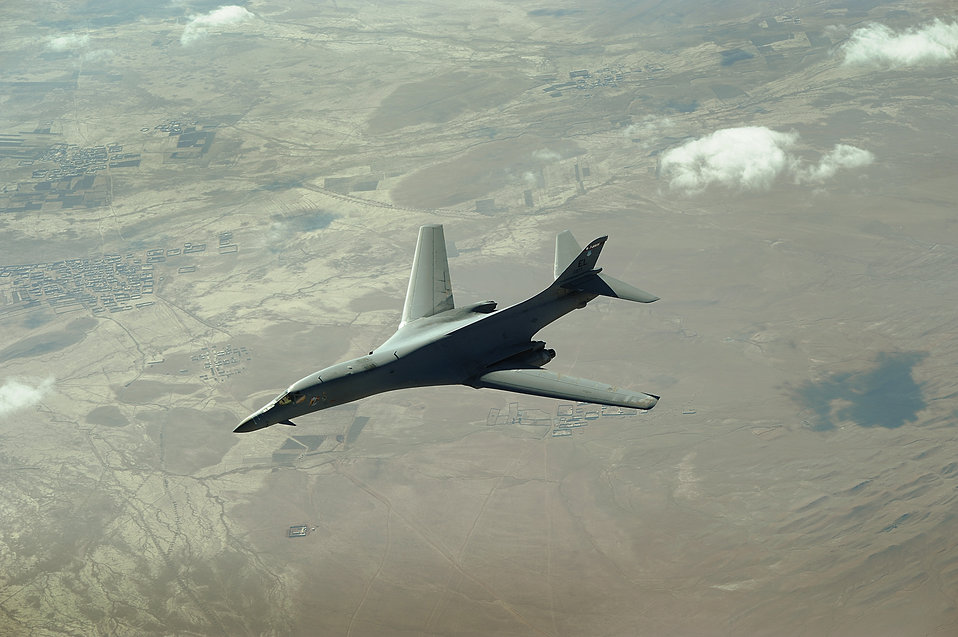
Jan. 22 airpower summary: B-1B bombs enemy compound

A B-1B Lancer flies a combat patrol mission over Afghanistan in support of Operation Enduring Freedom. The B-1B is assigned to the 34th Expeditionary Squadron and provides close-air support in Southwest Asia.